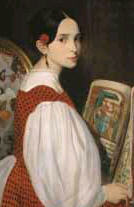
Auguste de Chatillon - Léopoldine Hugo